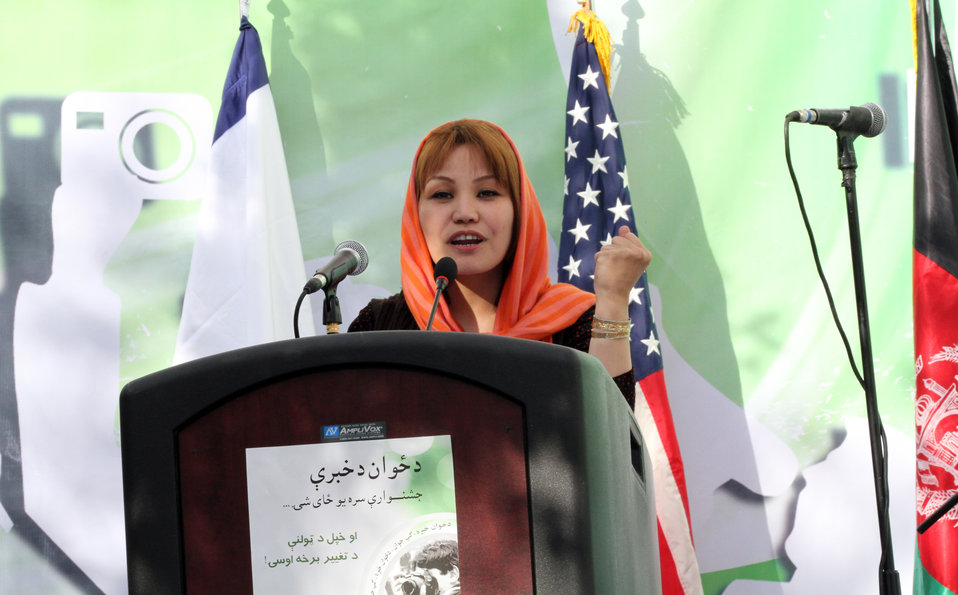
Afghan Youth Festival

Internews - USAID